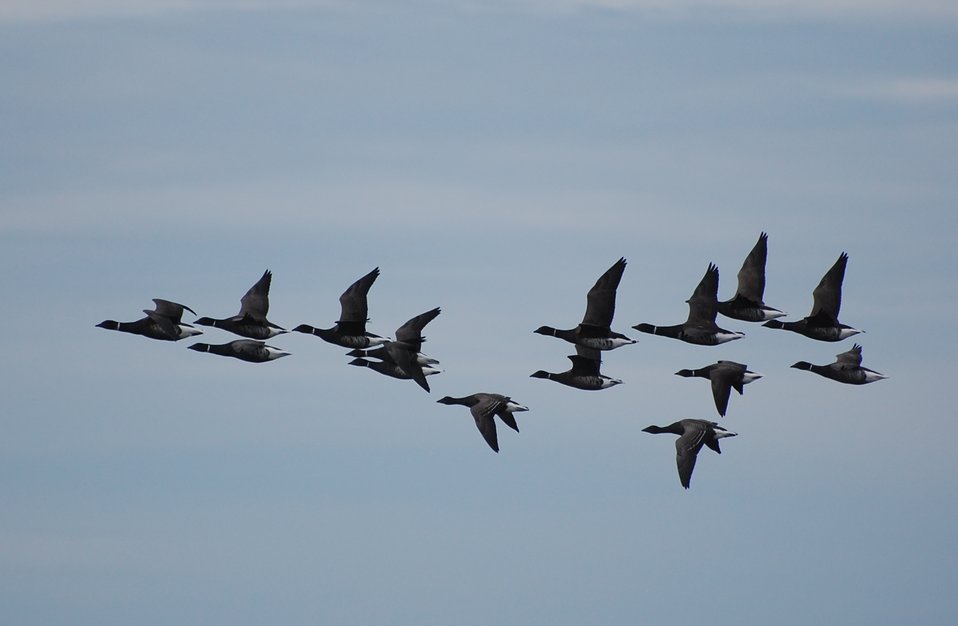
Brant at Izembek Lagoon, Izembek National Wildlife Refuge